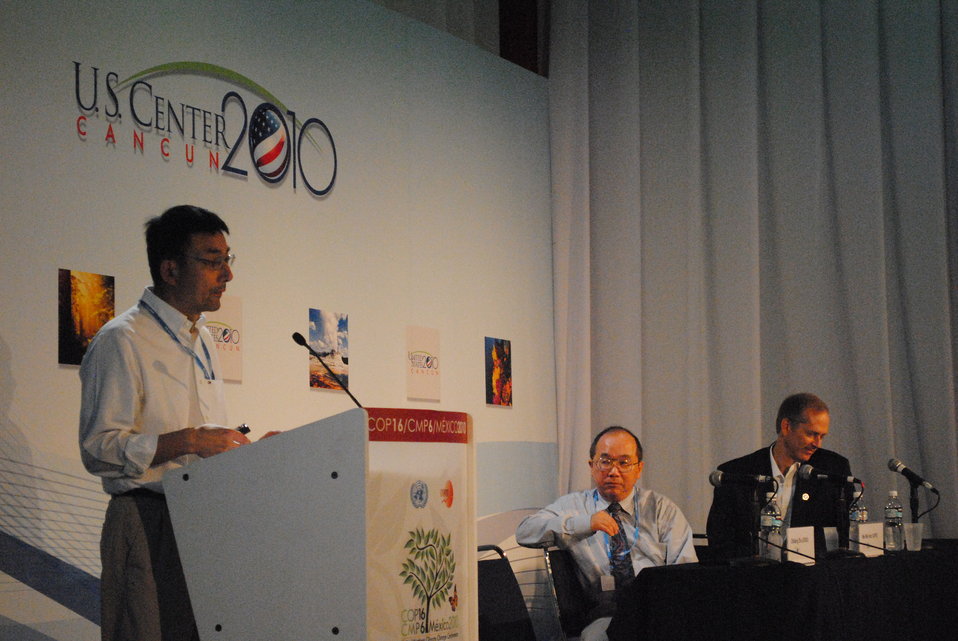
Zhiliang Zhu of USGS Explains the Impact of Fires

Zhiliang Zhu of the U.S. Geological Survey explains the impact of fires at a side event at the U.S. Center at COP-16 in Cancun, Mexico, on December 2, 2010. The U.S. Forest Service's Wei Min Hao, center, and NOAA's David Herring, right, look on.